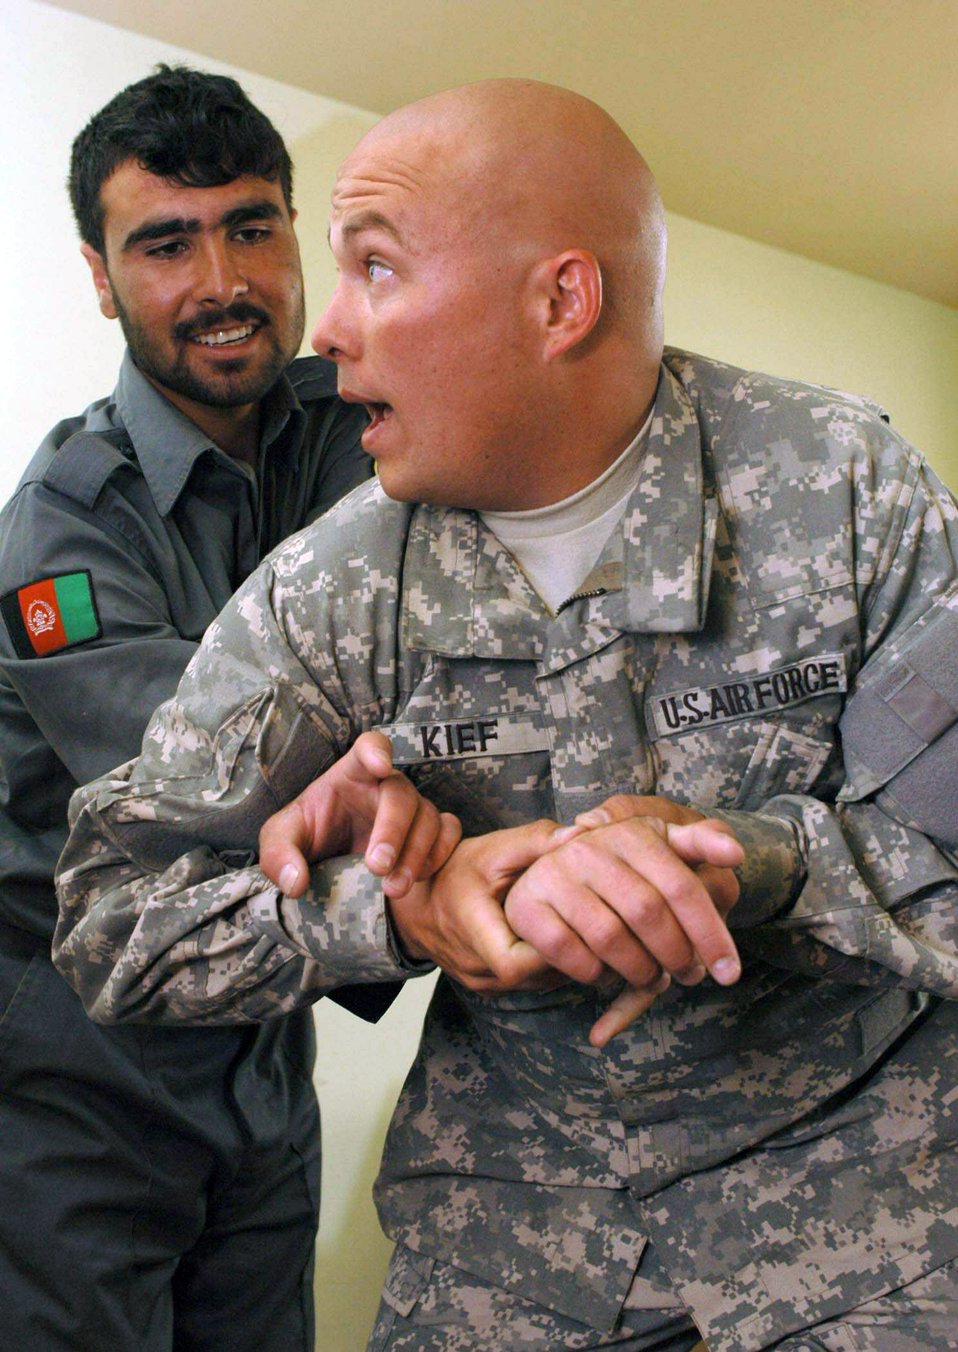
Airmen help Afgahnistan National Police hone skills

Senior Airman Andrew Kief demonstrates a restraint technique for a member of the Afgahnistan National Police as part of a training class held May 8 at Dandar village in the Parwan province, Afghanistan. Members assigned to the Bagram Airfield Provincial Reconstruction Team are responsible for providing police training for two provinces and 17 districts. Airman Kief is a PRT member deployed from Luke Air Force Base, Ariz.